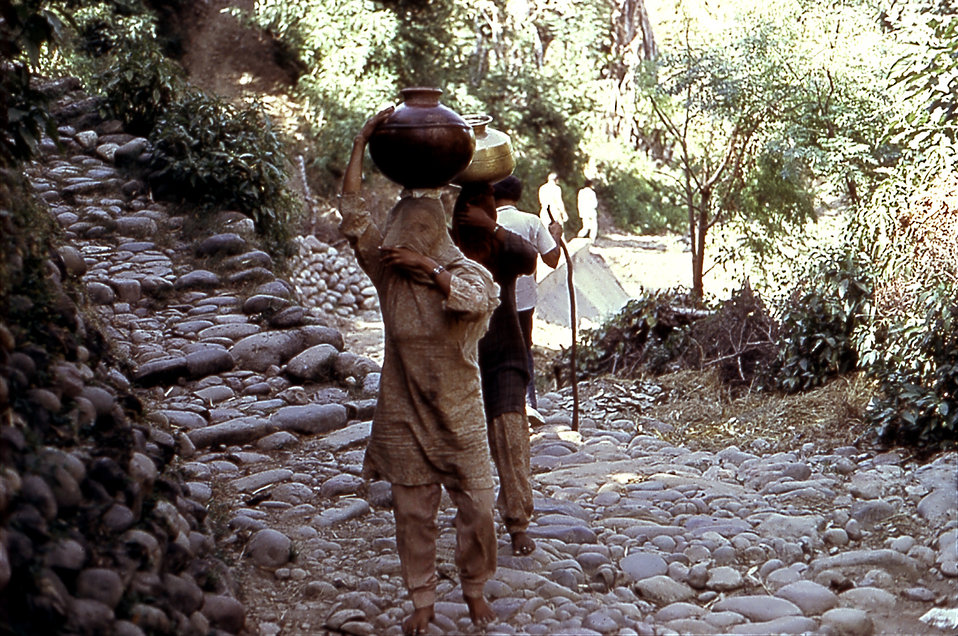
This 1974 photograph captured these Northern Indian women carrying water jugs by balancing them atop their heads. The water is usually gathered from a community water pump back to the home, and used for drinking, bathing , and cooking.